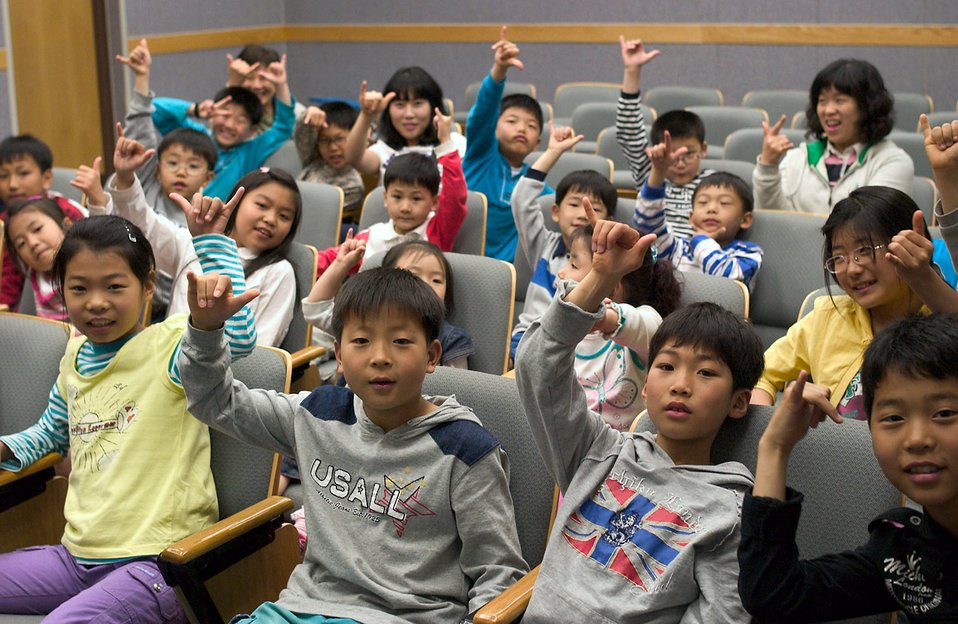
Korean orphans visit Kunsan Airmen

Children from a Gunsan City orphanage